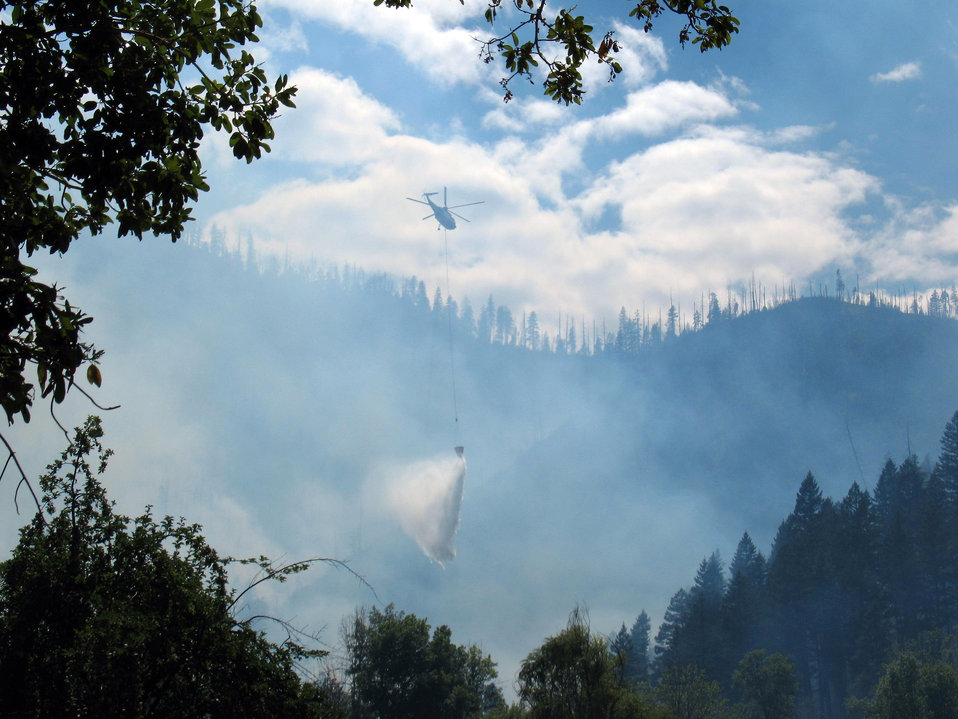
A helicopter makes a water drop on the Labrador Fire. The Labrador Fire in the Rogue River-Siskiyou National Forest near Cave Junction, OR began on Jul. 26, 2013 by lightning has consumed 2,020 acres.